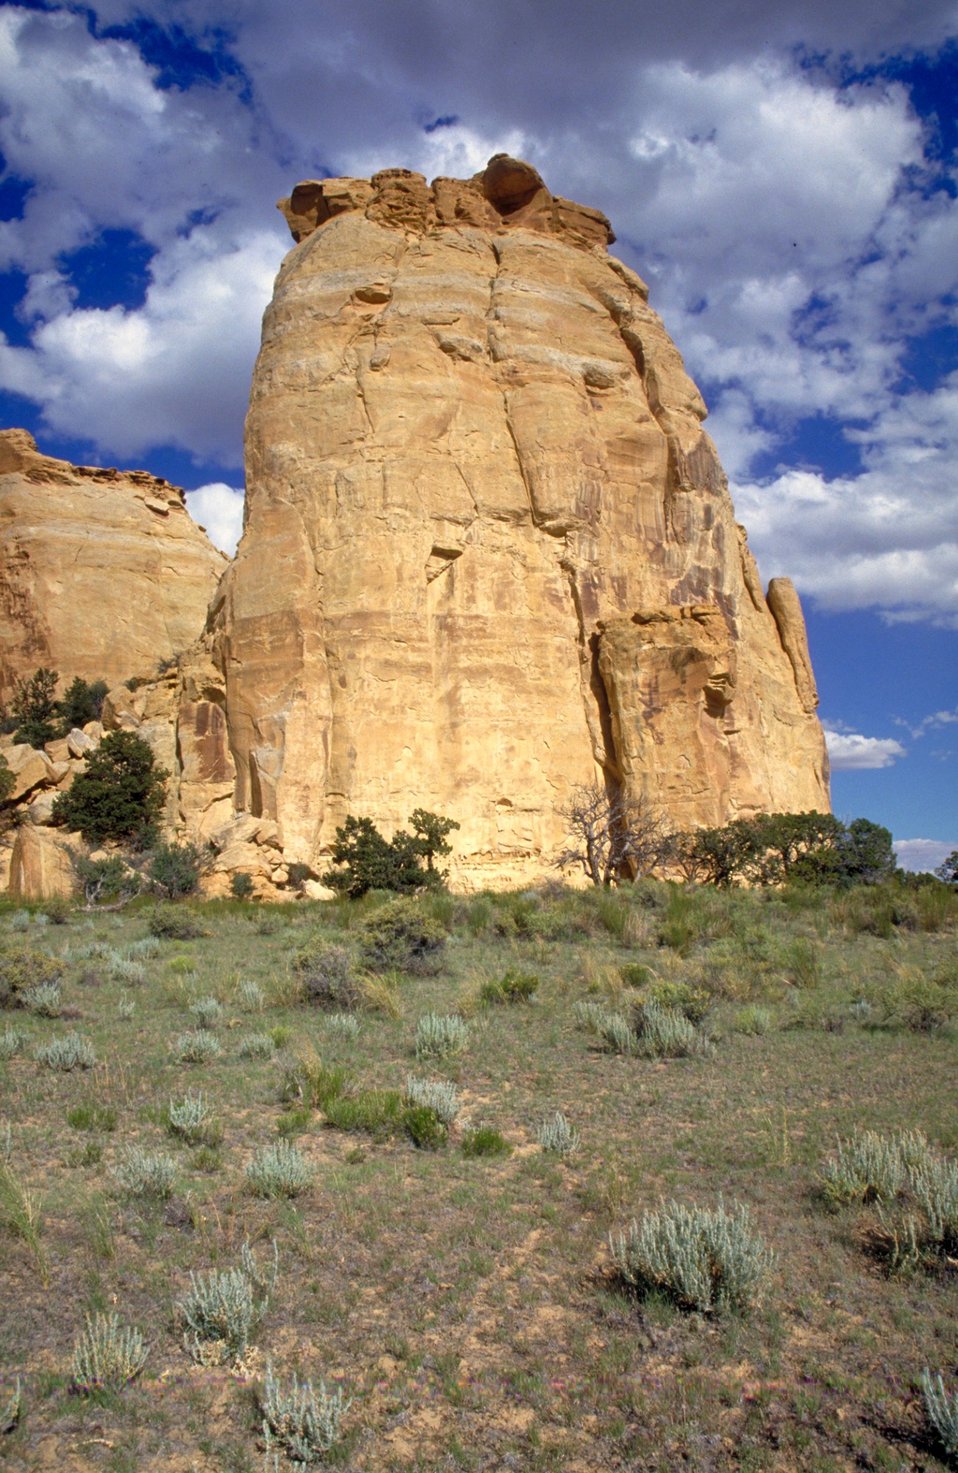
Head of Sinbad, San Rafael Swell